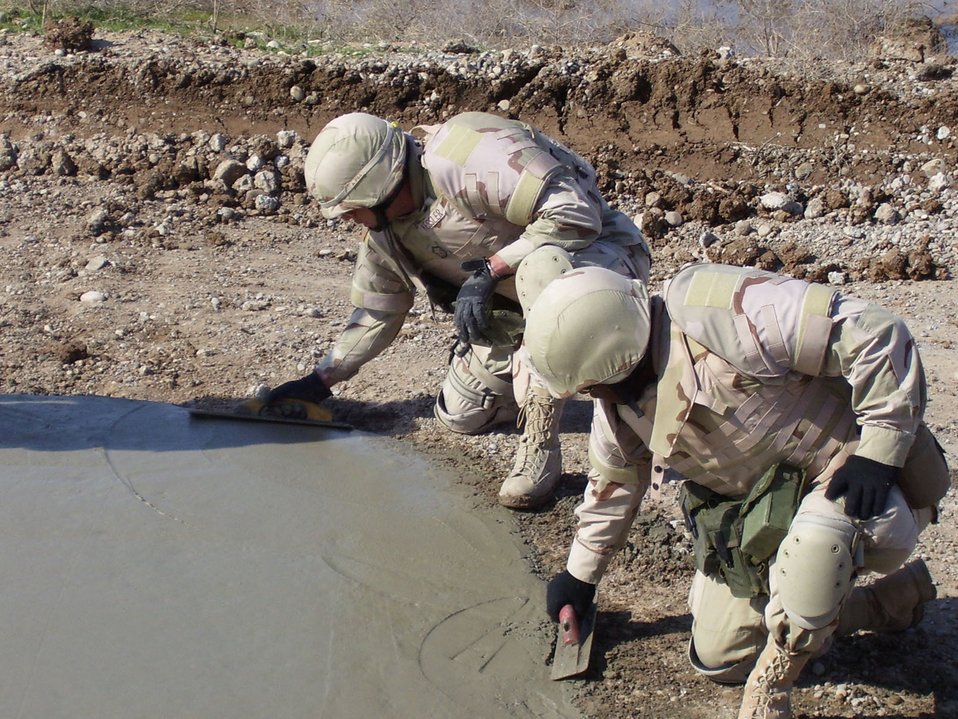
Civil engineers help rebuild Iraq

Master Sgt. Kirk Kessler and Senior Airman Ryan Whorley prepare a finished surface on a crater used multiple times by insurgents on a route on the outskirts of Kirkuk, Iraq. They are with Detachment 10 of the 732nd Expeditionary Civil Engineer Squadron and are assisting the Army in making convoy and patrol routes safe.